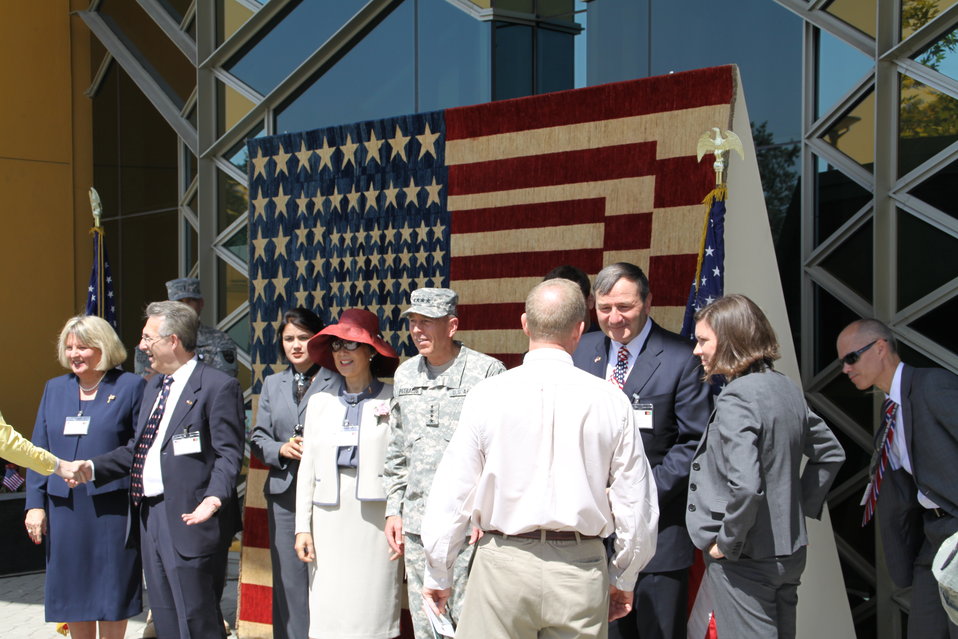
Kabul Official July 4th Celebration